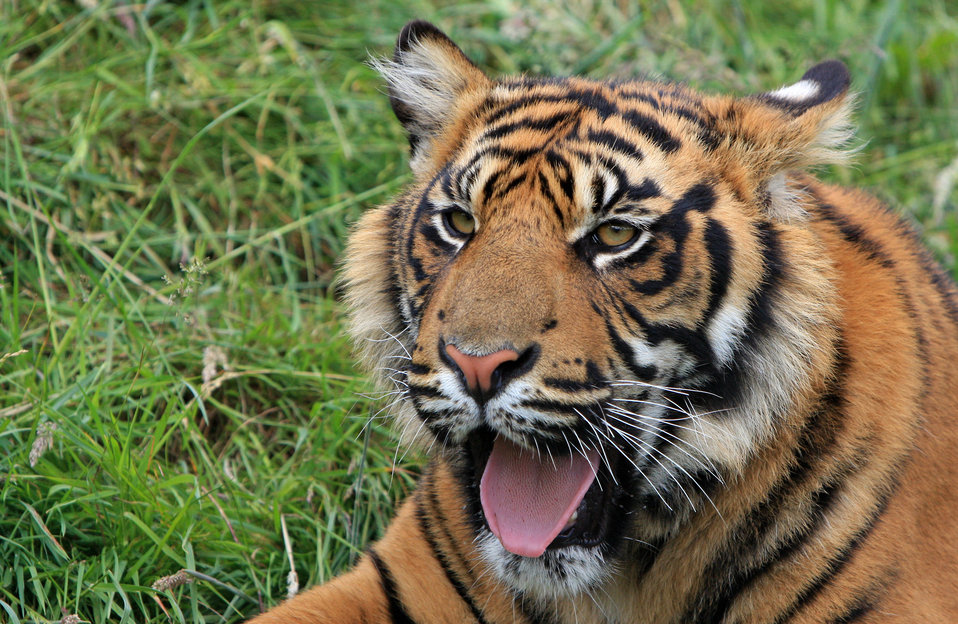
Tiger cub cute

Cute close-up photo of a sumatran tiger cub.